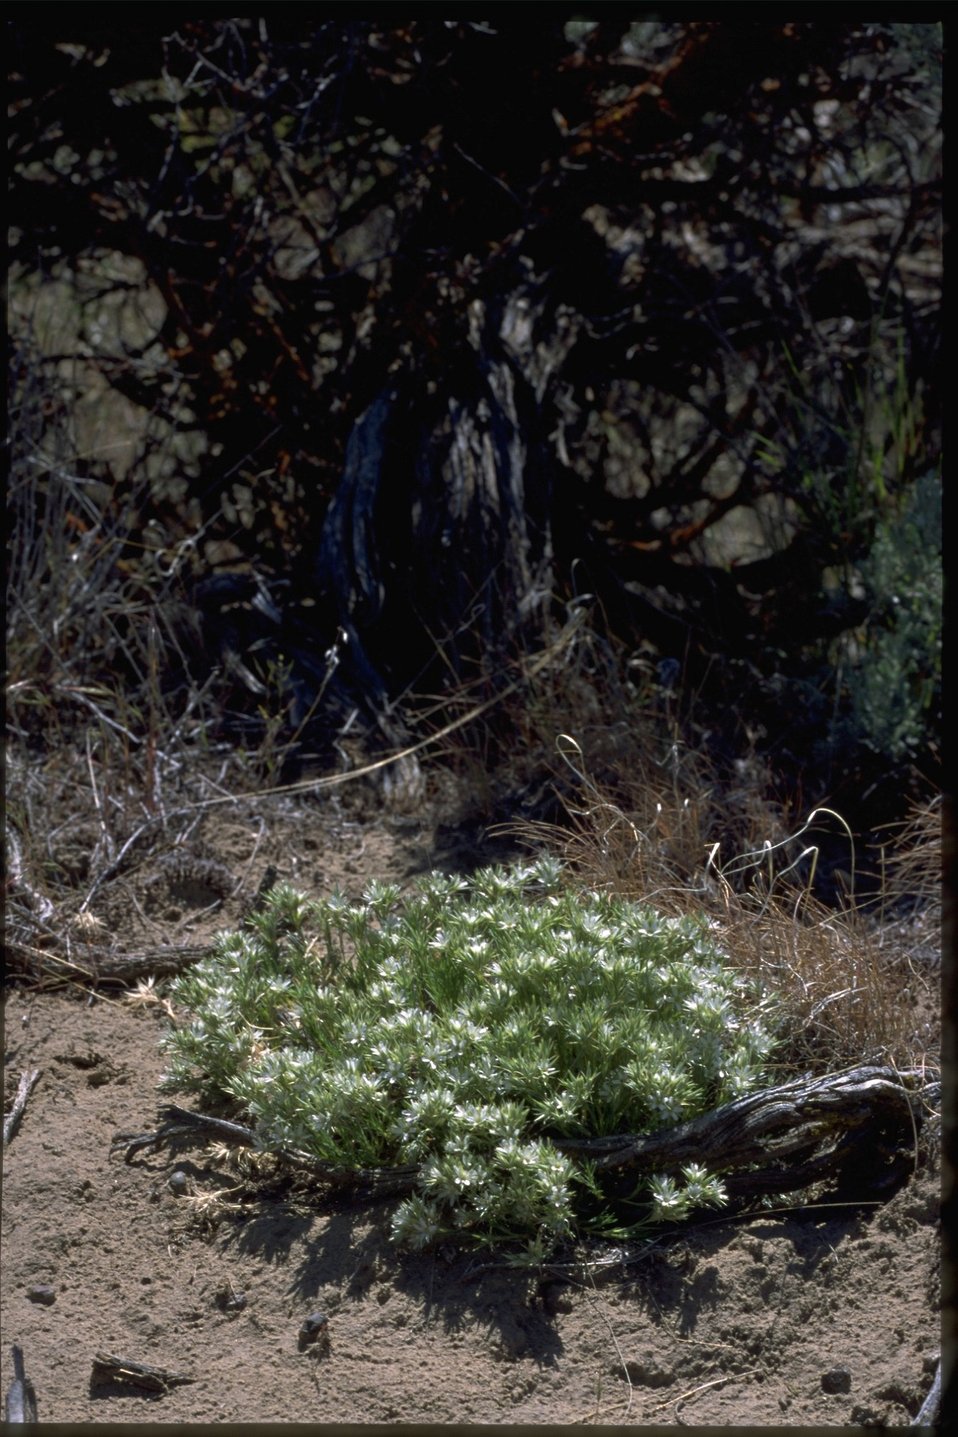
Farshot of Polemoniaceae.